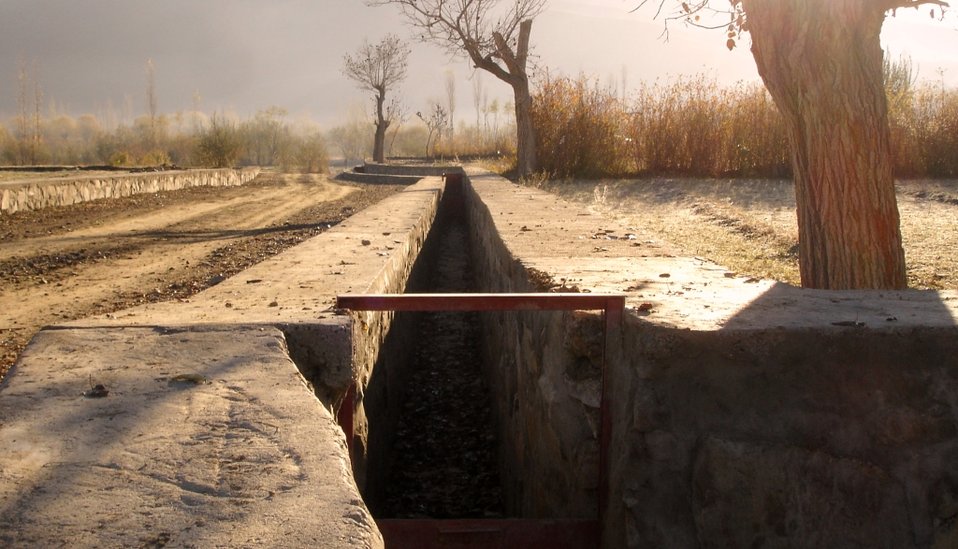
Sari Kala Village canal, Saydabad District Maydan Wardak Province

The rehabilitated canal with newly constructed culverts now runs by a graveled road, benefiting four villages in Saydabad District, Maydan Wardak Province, Southeast Afghanistan.